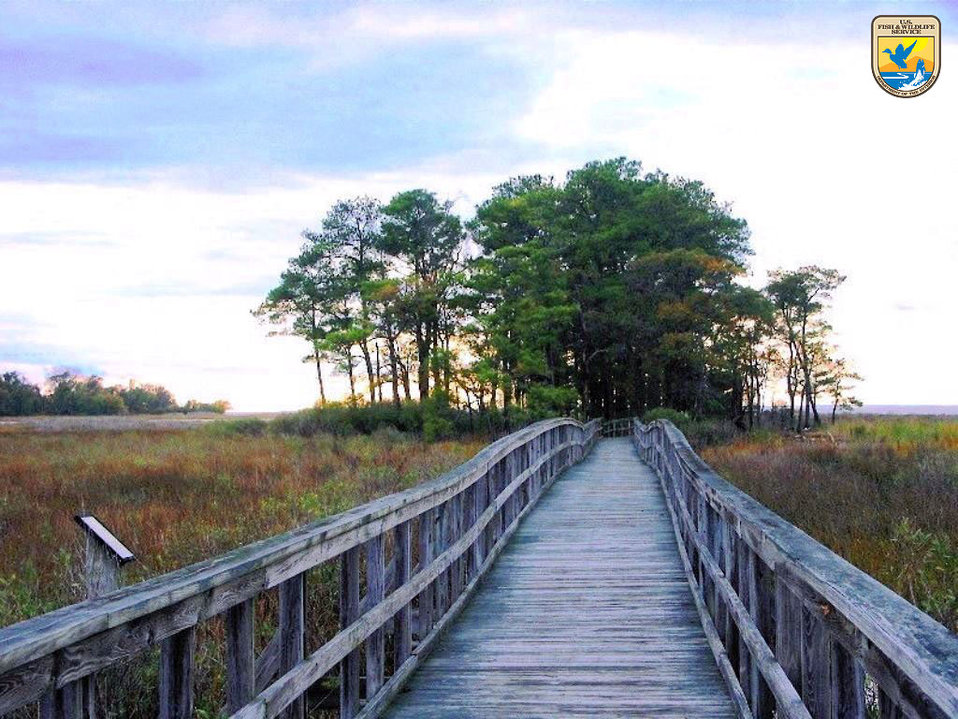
Tubby Cove Boardwalk - Region 5

The Tubby Cove Boardwalk at Eastern Neck National Wildlife Refuge.